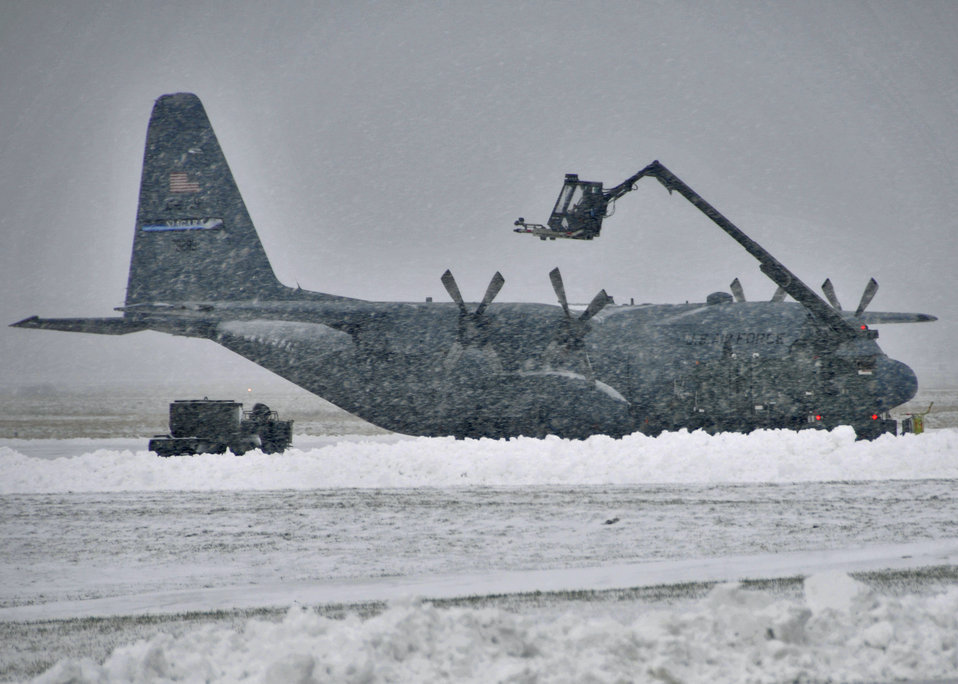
No matter the weather, we serve

Members of the Air Force Reserve Command's 914th Airlift Wing de-ice a C-130 Hercules Jan. 4, 2011, at Niagara Falls Air Reserve Station, N.Y. When there are freezing conditions and precipitation, de-icing an aircraft is crucial because of potentially severe consequences.